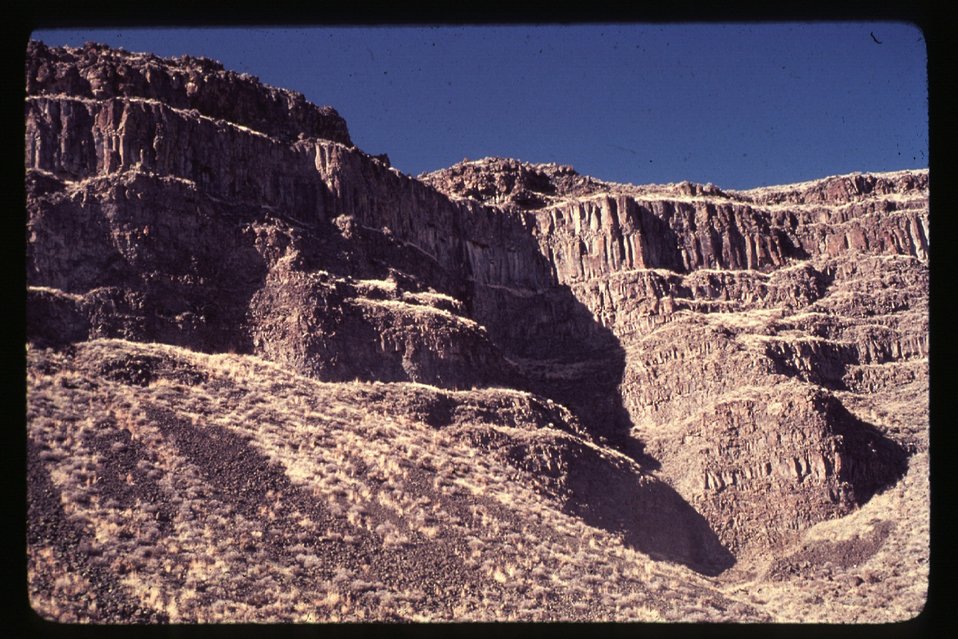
Canyon Scenery Snake River Canyon Owyhee Field Office LSRD Lower Snake River District